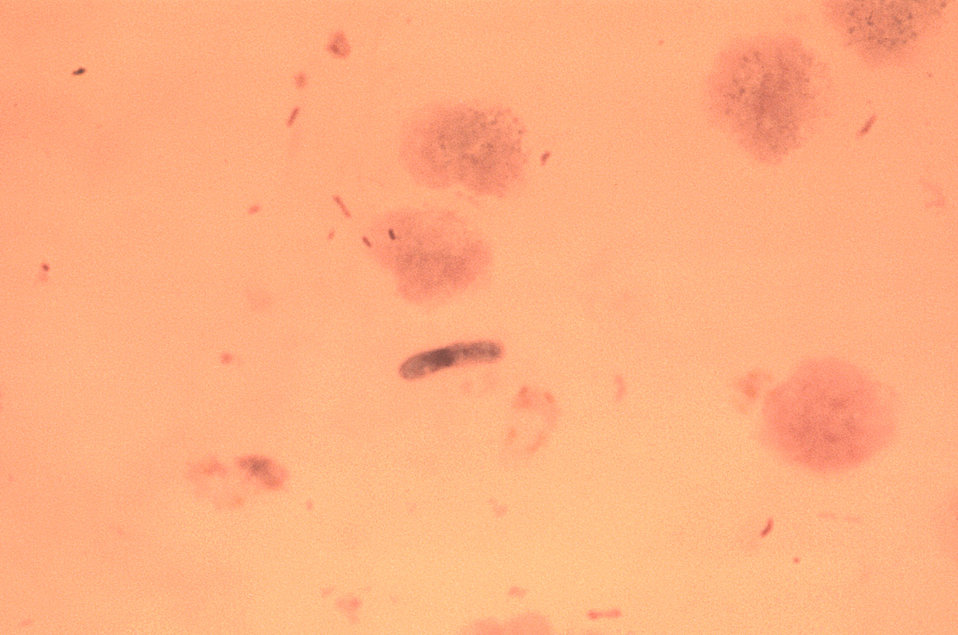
This thick film Giemsa stained micrograph reveals the presence of mold contaminants producing an artifactual finding.